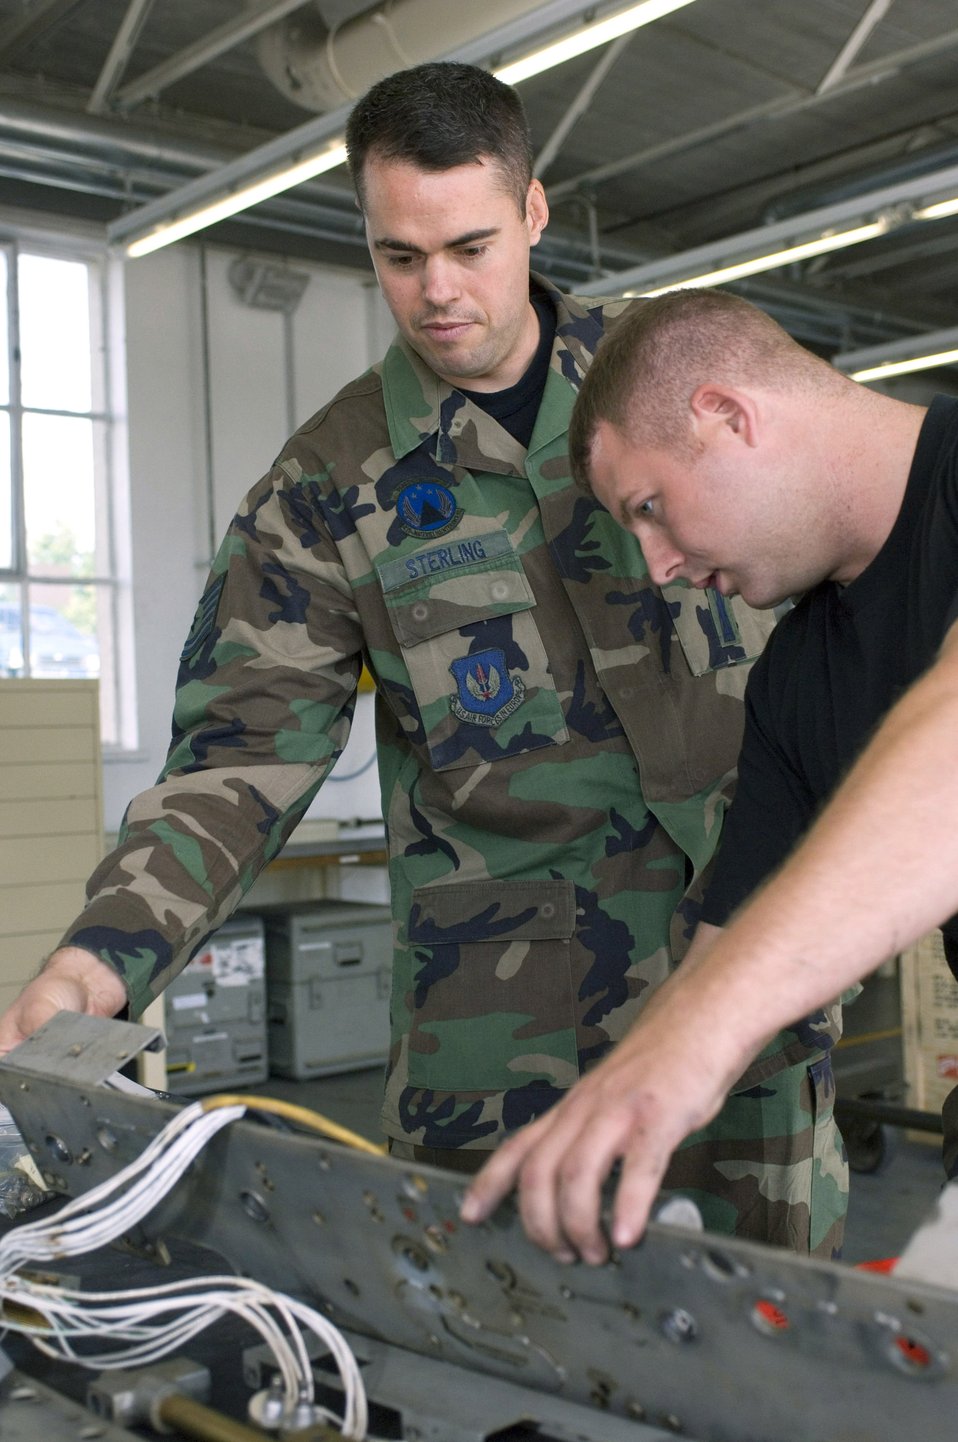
Sembach squadron maintains war reserves

Tech. Sgt. Daniel Sterling (left) and Senior Airman Robert Langham prepare to rewire a bomb rack Sept. 20 at Sembach Air Base, Germany, ensuring it's ready for immediate worldwide deployment. Sergeant Sterling and Airman Langham are aircraft armament systems specialists with Sembach's 435th Materiel Maintenance Squadron.